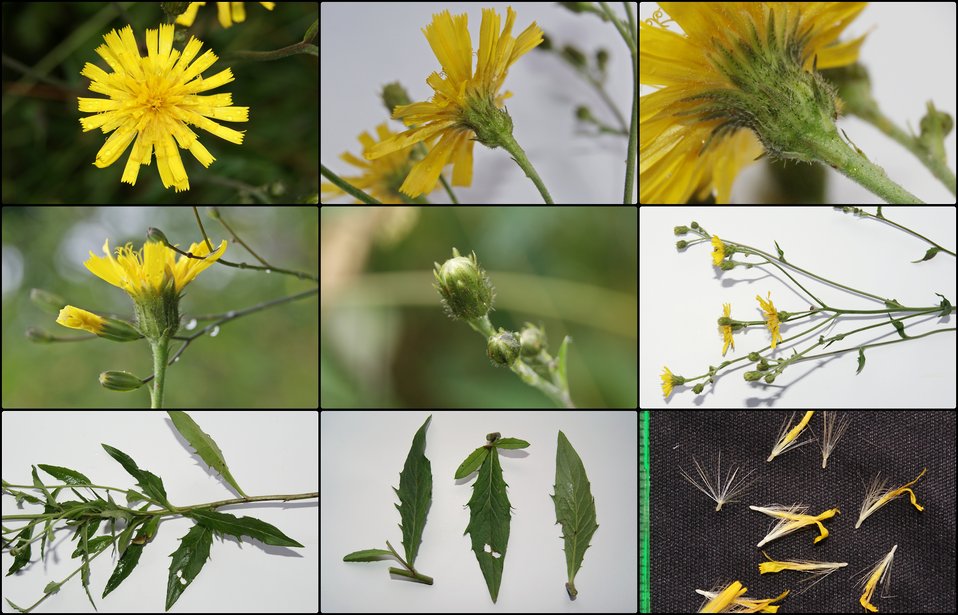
Deutsch: Hieracium laevigatum, 57258 Freudenberg.